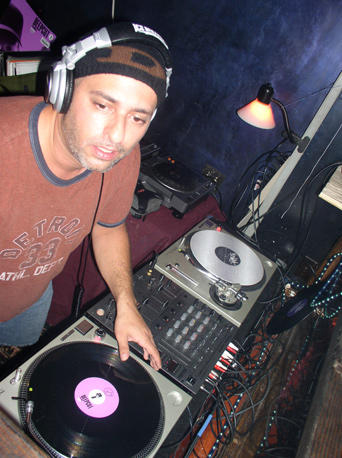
DJ Sharaz